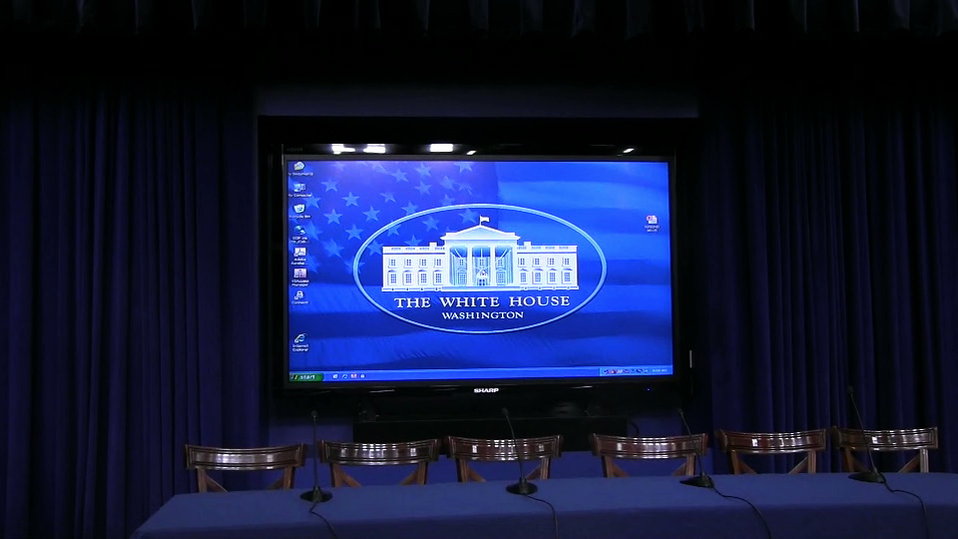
Panel Table